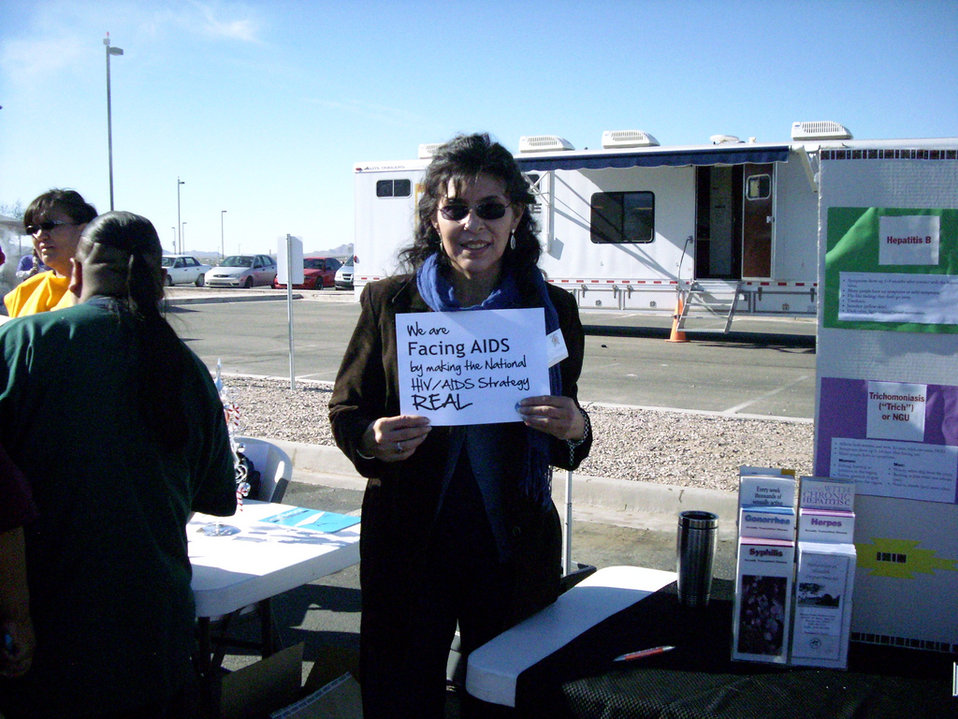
We are Facing AIDS through NHAS-35